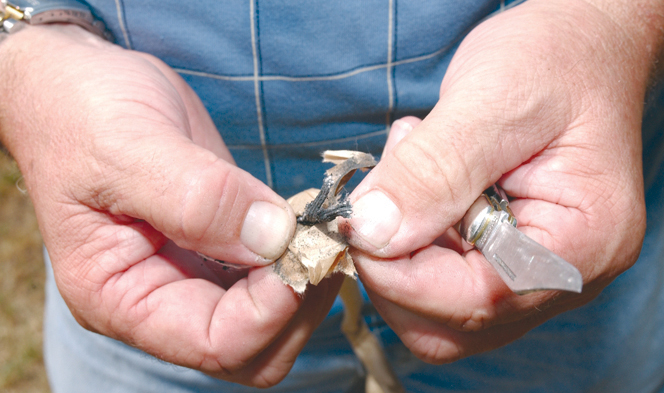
Civilian ensures Fourth of July celebration goes off with bang

SEYMOUR JOHNSON AIR FORCE BASE, N.C. -- Bob Howett frays the end of a fuse while preparing for this year's Fourth of July celebration. Opening the end of the fuse slows down the speed at which the fuse burns, ensuring the load crew has enough time to get away from the launching tube. Mr. Howett has been putting on fireworks shows here since the 1980s. The Air Force retiree works for the 4th Civil Engineer Squadron's self-help store.